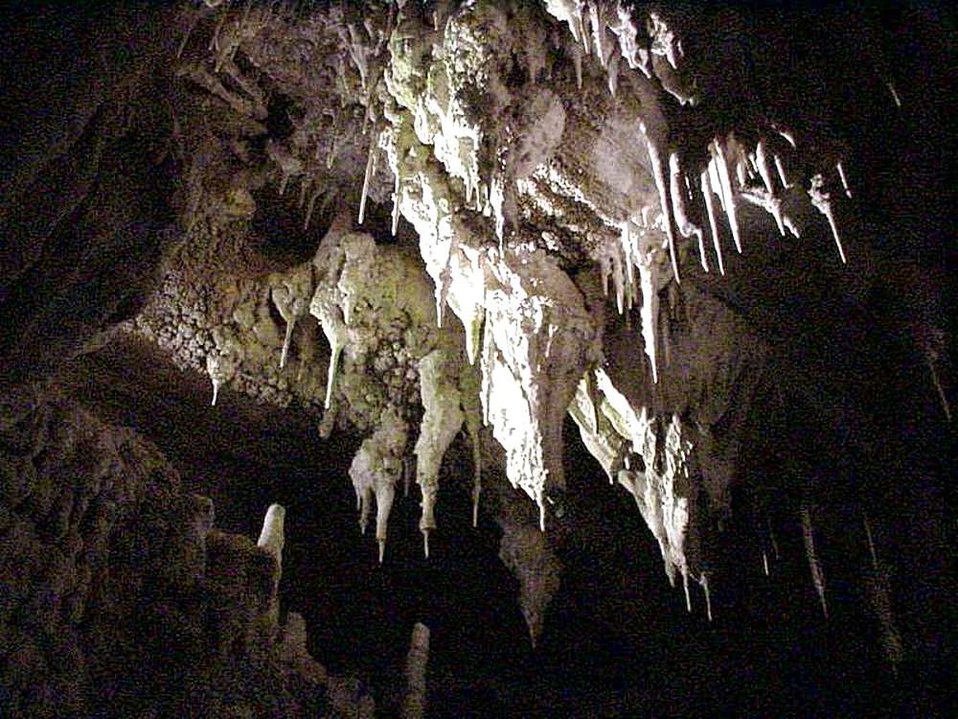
English:
Image title: Beautiful crystal cave Image from Public domain images website, http://www.public-domain-image.com/full-image/nature-landscapes-public-domain-images-pictures/caves-public-domain-images-pictures/beautiful-crystal-cave.jpg.html